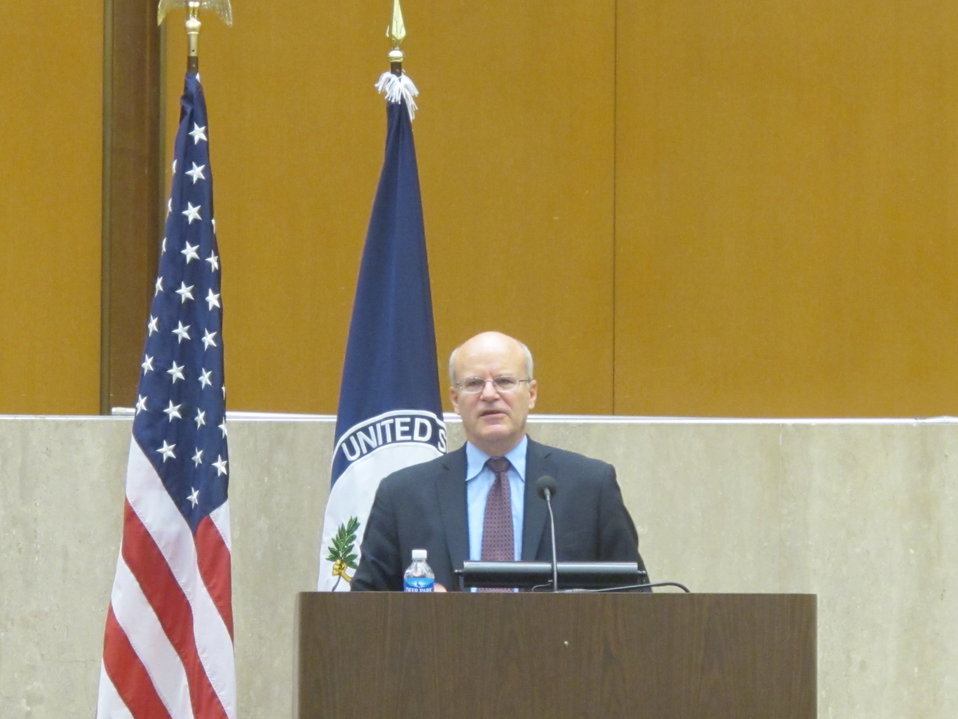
Deputy Administrator Steinberg Speaks at the Global Young Leaders Conference

Deputy Administrator Steinberg from the United States Agency for International Development spoke to the students of the Global Young Leaders Conference about the role of development in U.S. foreign policy at the U.S. Department of State in Washington, D.C., on June 29, 2011.